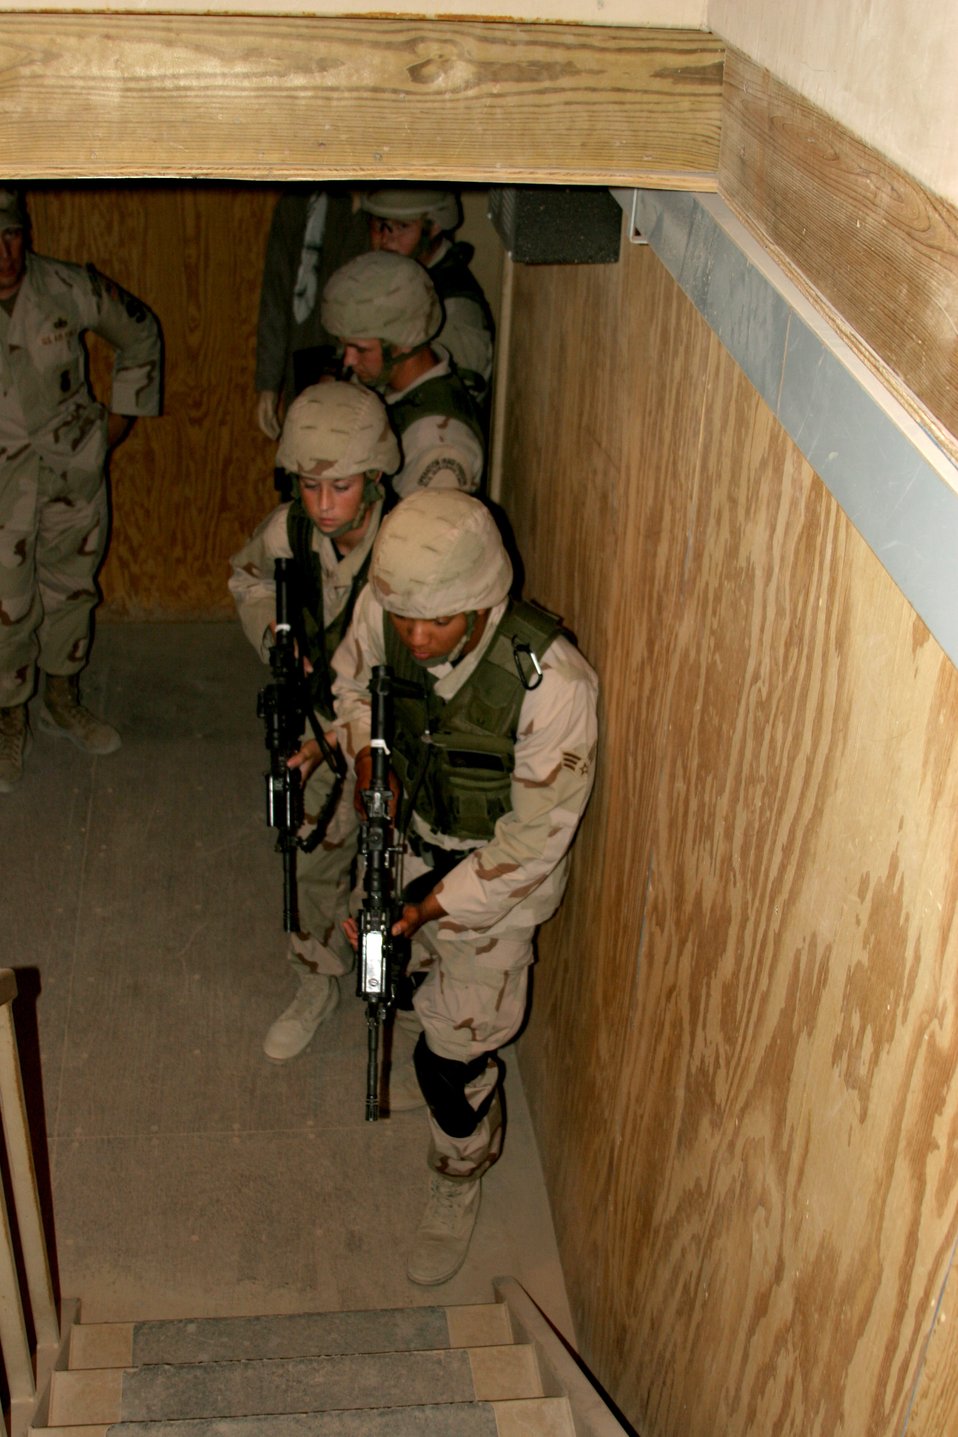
Mission of security forces constantly evolving

Teamwork is the key for Airmen participating in